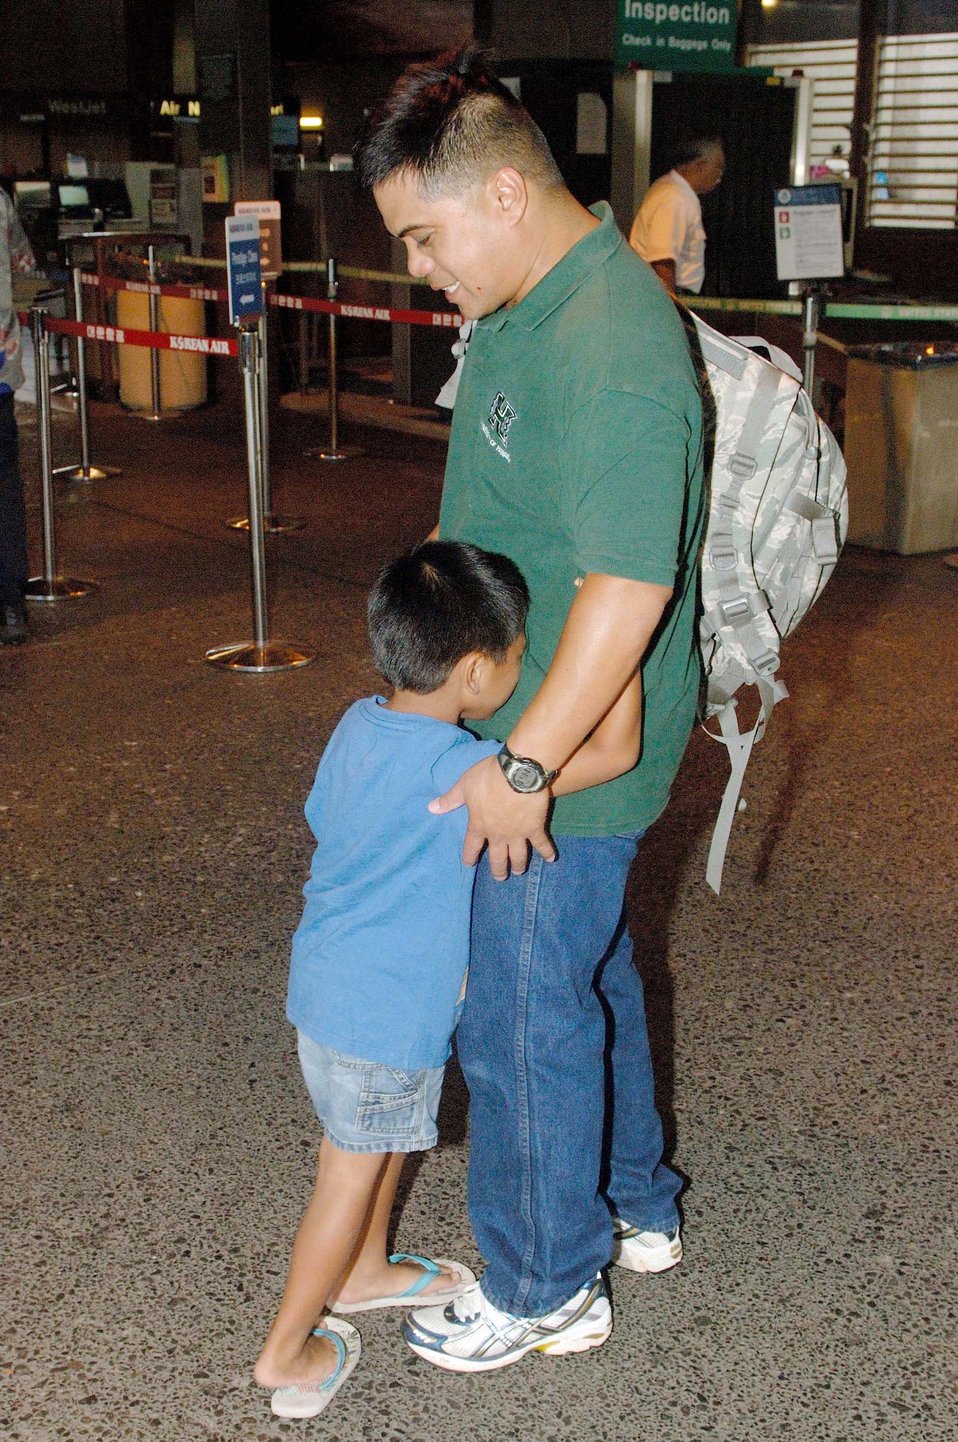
Hickam Airmen deploy to Afghanistan

Tech. Sgt. Leonard Samson receives one last hug from his son prior to leaving for his deployment July 31 at Honolulu International Airport in Hawaii. Sergeant Samson, a 624th Civil Engineer Squadron member, is one of 54 reservists from the 624th CES being mobilized to deploy to Afghanistan.